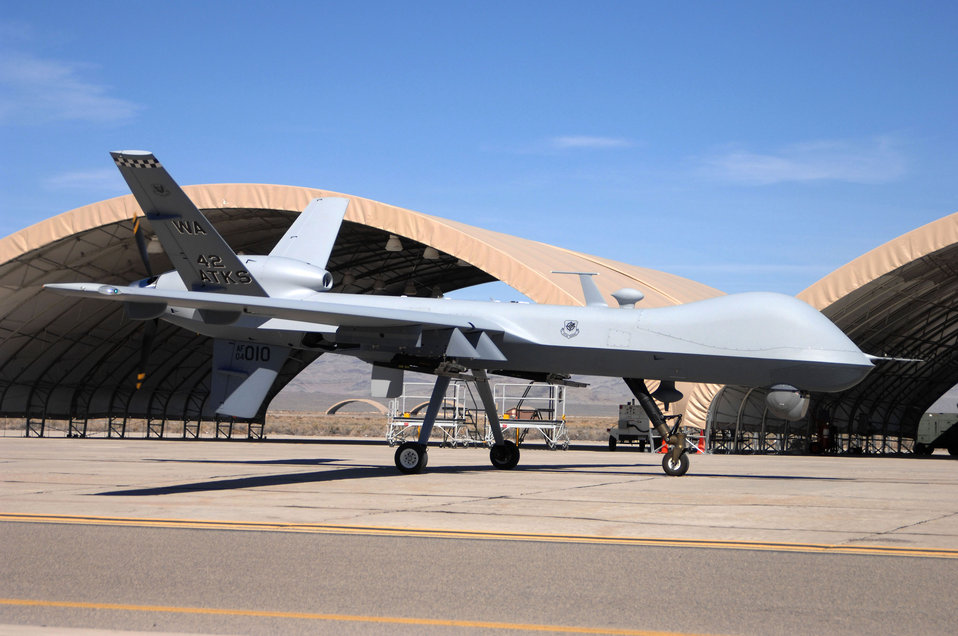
The Reaper arrives

An MQ-9 Reaper unmanned aerial vehicle arrives at Creech Air Force Base, Nev., March 13, marking the first operational airframe of its kind to land here. This Reaper is the first of many soon to be assigned to the 42nd Attack Squadron.